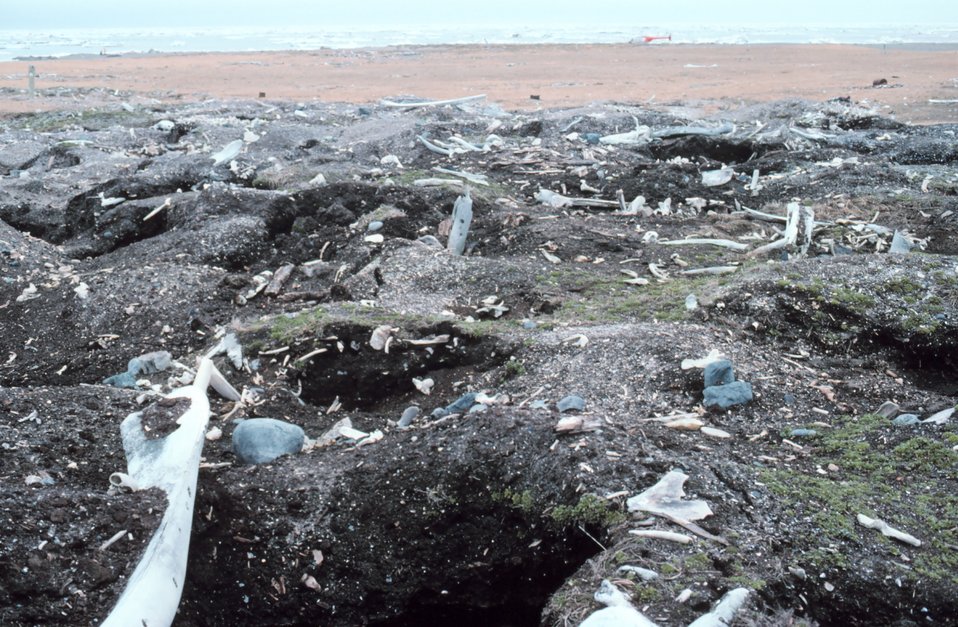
Currents carry many dead things to Punuk Island making it the graveyard of the Bering Sea.